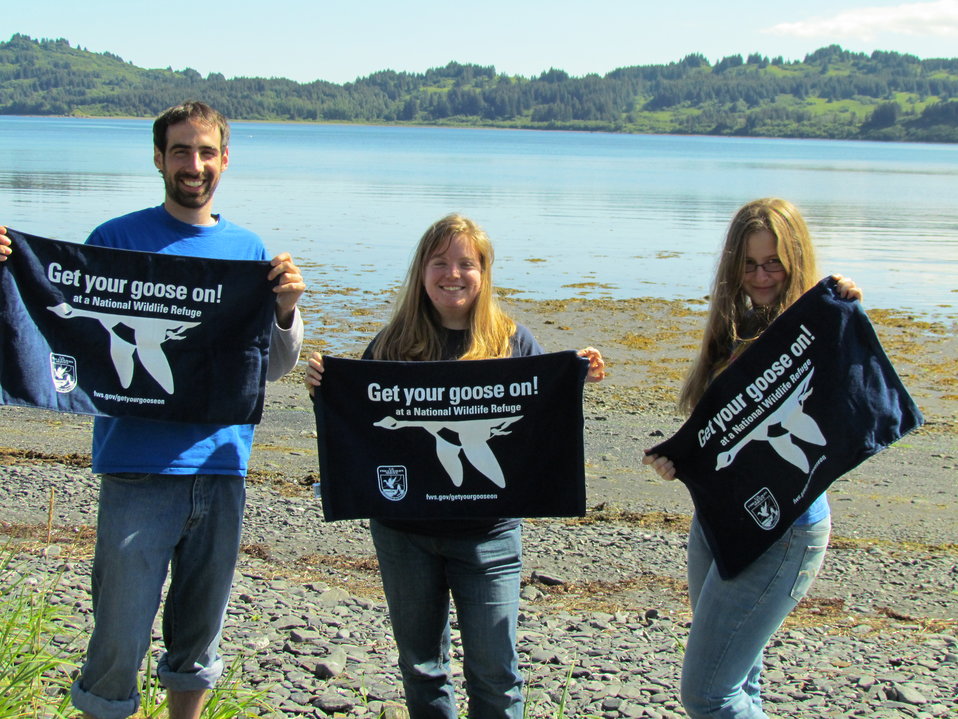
Get Your Goose On! - Alaska Style

Student Conservation Association interns, Rory Psotka, Ali Sutton and Kristen Riesberg

Credit: Shelly Lawson / USFWS

The Kodiak National Wildlife Refuge is a United States National Wildlife Refuge in the Kodiak Archipelago in southwestern Alaska, United States.

The Kodiak National Wildlife Refuge includes the southwestern two-thirds of Kodiak Island, Uganik Island, the Red Peaks area of Afognak Island and all of Ban Island in the archipelago. It encompasses 1,990,418 acres (8,054.94 km2).[2] The refuge is administered from offices in Kodiak.

The refuge contains seven major rivers and about 100 streams. It is a spawning ground for all six species of Pacific Ocean salmon, trout and several other fish species, as well as a nesting ground for 250 species of bird, many of which feed on salmon. The refuge has only six native species of mammals: Kodiak brown bear, red fox, river otter, ermine, little brown bat and tundra vole. The non-native mammals Sitka deer, mountain goat, Roosevelt elk, snowshoe hare and beaver were introduced to the archipelago between the 1920s and 1950s and are now hunted and trapped.

The climate of the refuge is that of southern Alaska, mild and rainy. Many areas in the refuge are densely forested with Sitka Spruce at lower elevations. There are grasslands in drier areas and at higher elevations. The refuge contains several small glaciers.